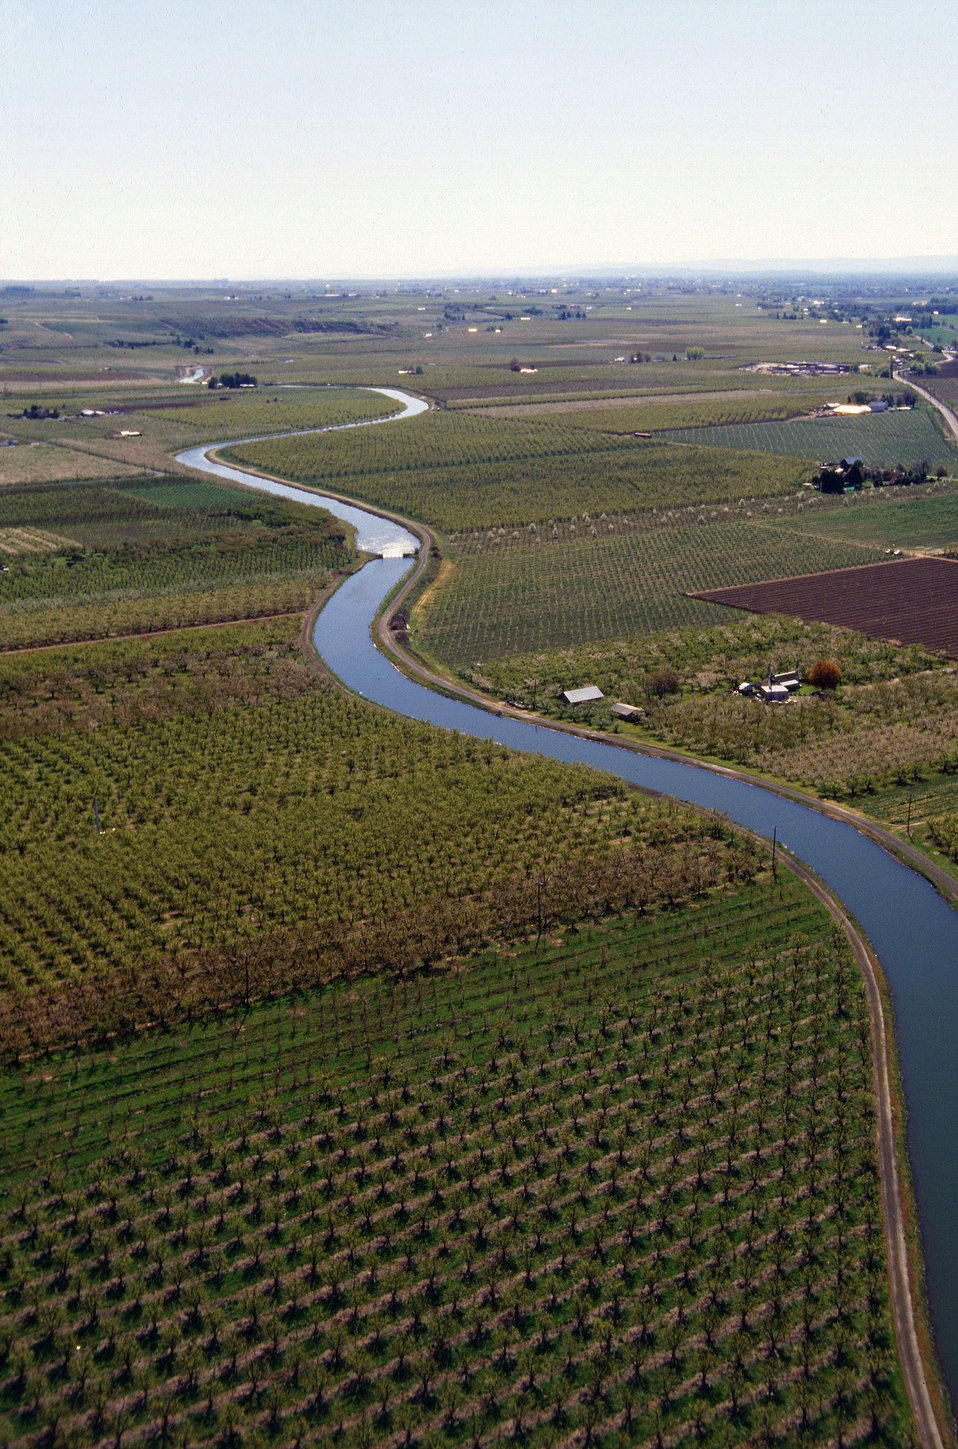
This is an aerial view of apple and pear orchards near Yakima, WA.